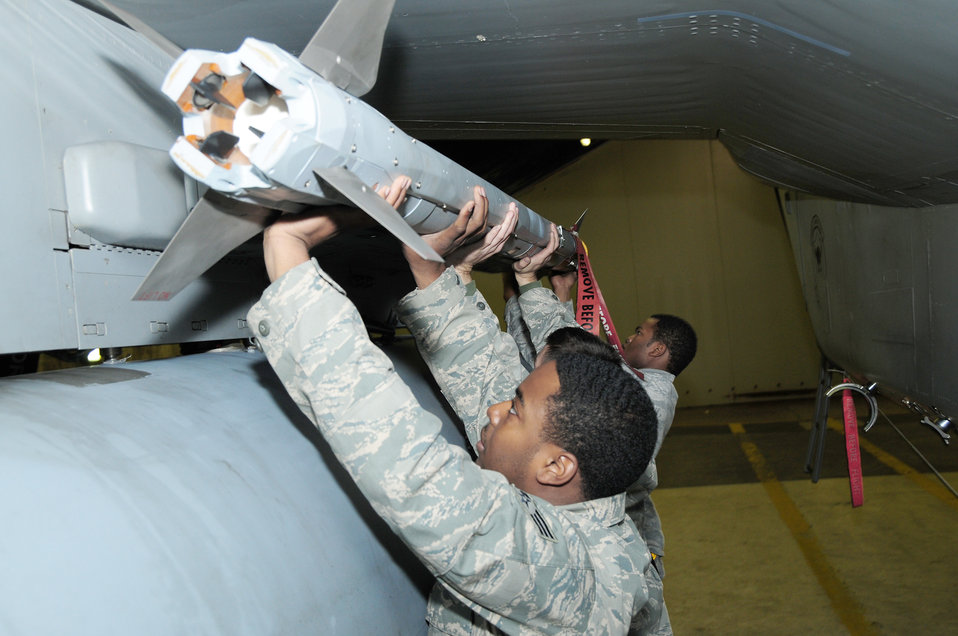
Icelandic Air Policing Mission

Senior Airman Jonathan Ard (left to right), Staff Sgt. Ronald Townsend and Airman 1st Class Billy Reams load an AIM-9X missile on an F-15C Eagle Sept. 23, 2010, at Keflavik, Iceland. The Airmen are deployed from the 748th Aircraft Maintenance Squadron at Royal Air Force Lakenheath, England, in support of NATO's Icelandic Air Policing Mission.